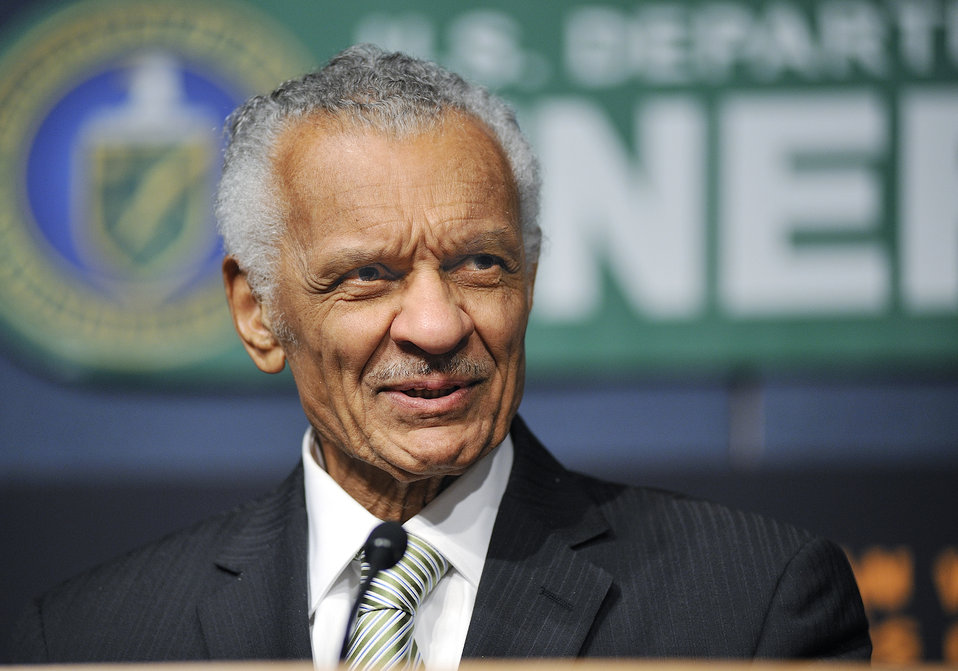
Martin Luther King Jr. Day Celebration at DOE headquarters.